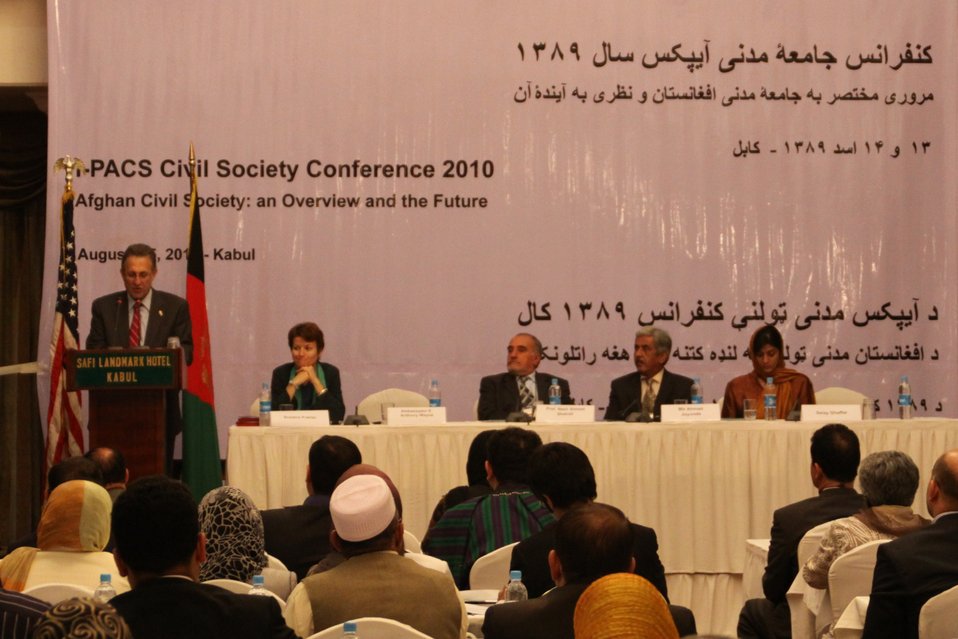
کنفرانس جامعۀ مدنی در کابل برگزار گردید